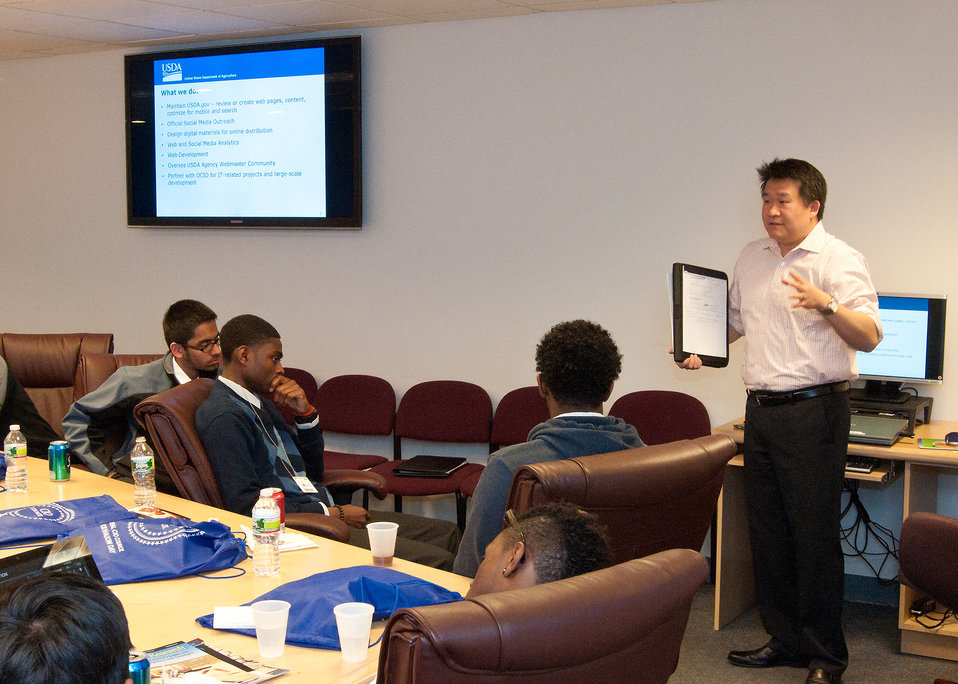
U.S. Department of Agriculture (USDA) Web Communications Digital Media Director Peter Rhee explains web design and strategy to students from Edison Academy in Fairfax, VA during the annual USDA Information Technology (IT) Job Shadow Day held by the Office of Chief Information Officer (OCIO) to introduce local high school students to careers in information technology in Washington, D.C. on Tuesday, Apr. 2, 2013.